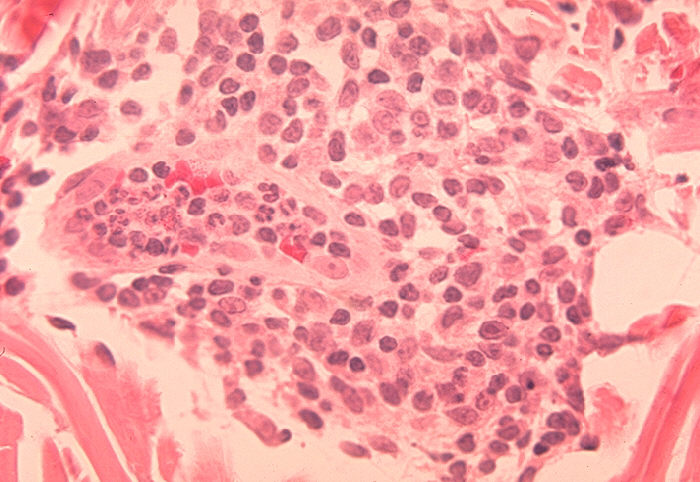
Histopathology of delayed hypersensitivity reaction to Schistosoma mansoni antigen in monkey with transfer factor. Skin.